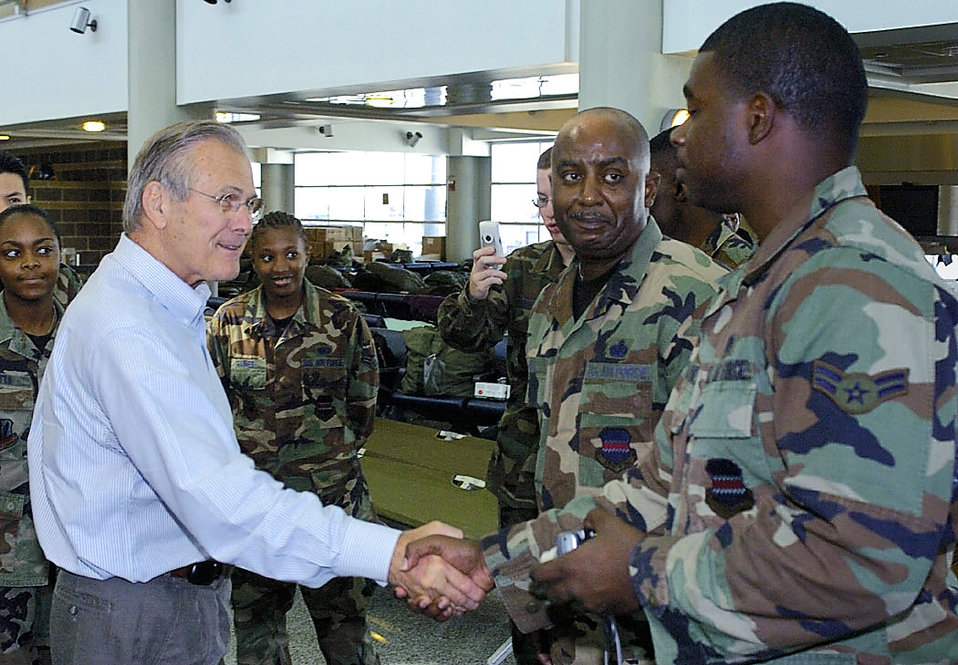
Rumsfeld, Myers New Orleans airport

LOUIS ARMSTRONG NEW ORLEANS INTERNATIONAL AIRPORT, La. -- Secretary of Defense Donald Rumsfeld thanks Airman 1st Class David McAlpine for his efforts during hurricane evacuation.